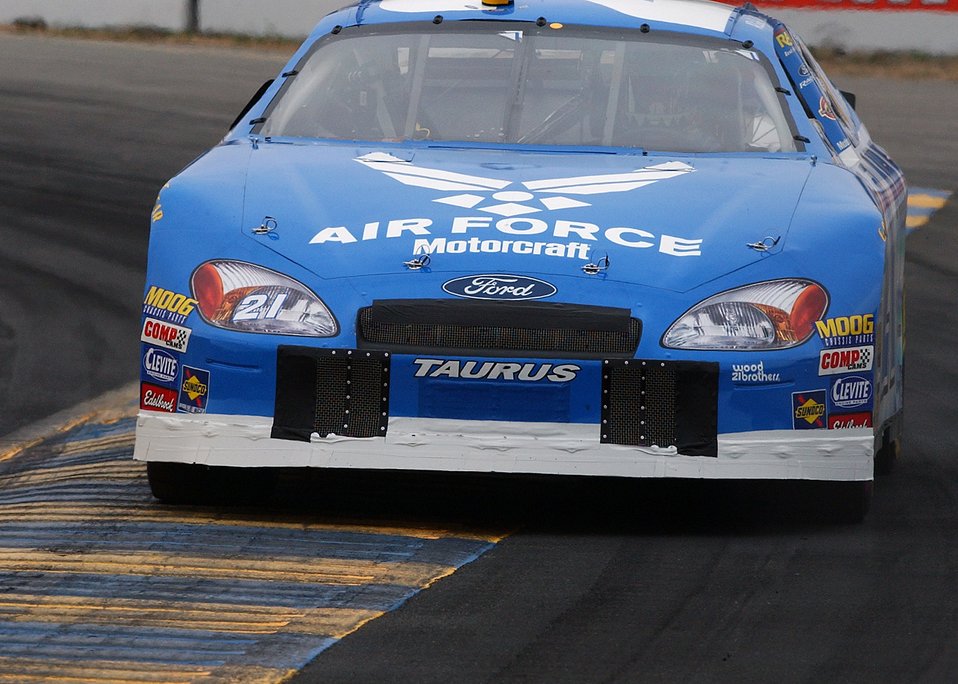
A close second

SONOMA, Calif. -- Ricky Rudd, driver of the Air Force's No. 21, finished second in the Dodge/Save Mart 350 at Infineon Raceway here June 26. This was Rudd's highest finish of the season.